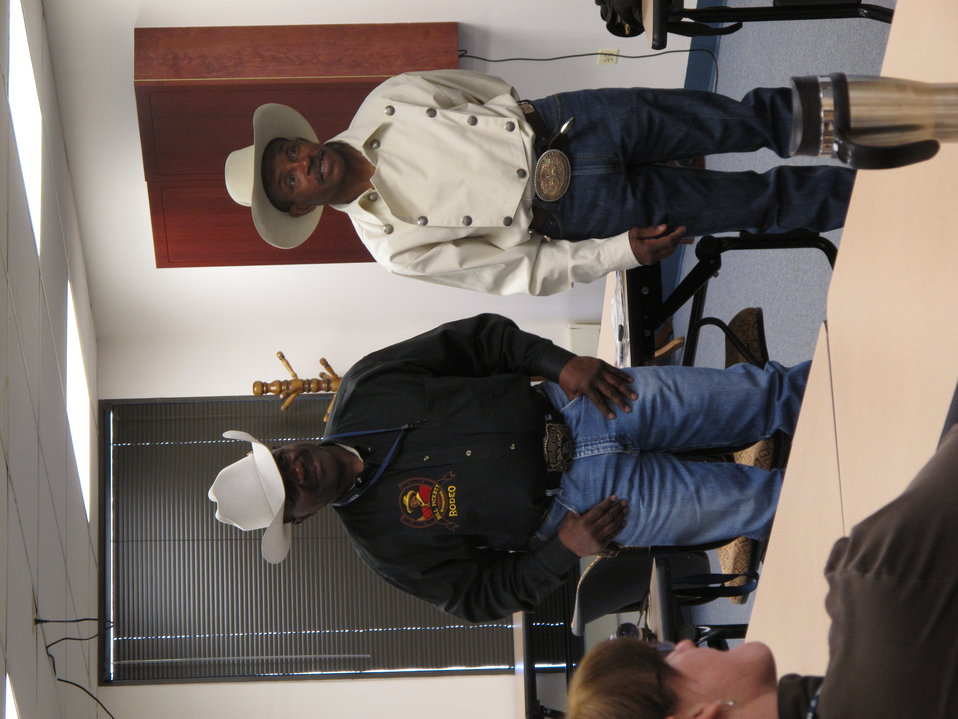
Maurice Wade and Charles Sampson

Maurice 'Moe Betta' Wade and Charles Sampson are introduced. Maurice was named the Bill Pickett Rookie of the Year in 1985 and Charles was the first African American to win a world title in the Professional Rodeo Cowboys Association (PRCA) World title.